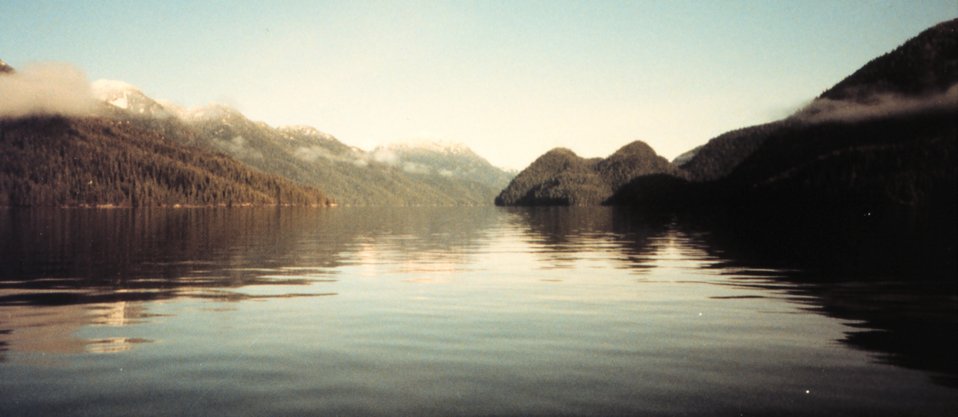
Boca de Quadra - an early dusting of snow on the surrounding mountains